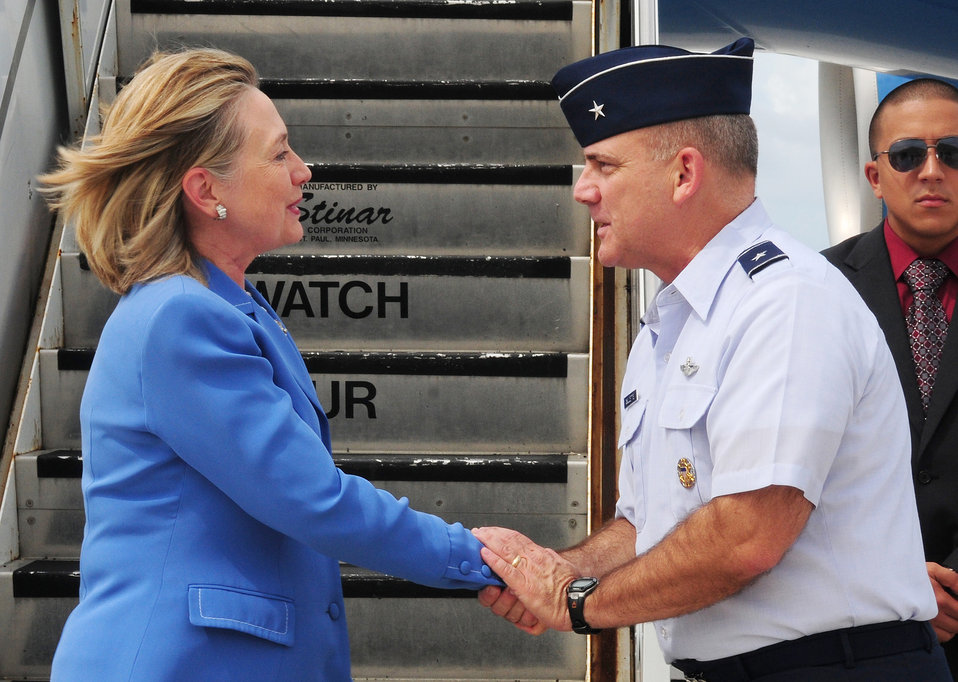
Secretary of State delivers message of praise to Andersen servicemembers

Secretary of State Hillary Clinton greets Brig. Gen. John W. Doucette Oct. 29, 2010, after her arrival to Andersen Air Force Base, Guam. Secretary Clinton reaffirmed Guam's importance to the nation, and her gratitude to servicemembers for their dedication and sacrifice. General Doucette is the 36th Wing commander.